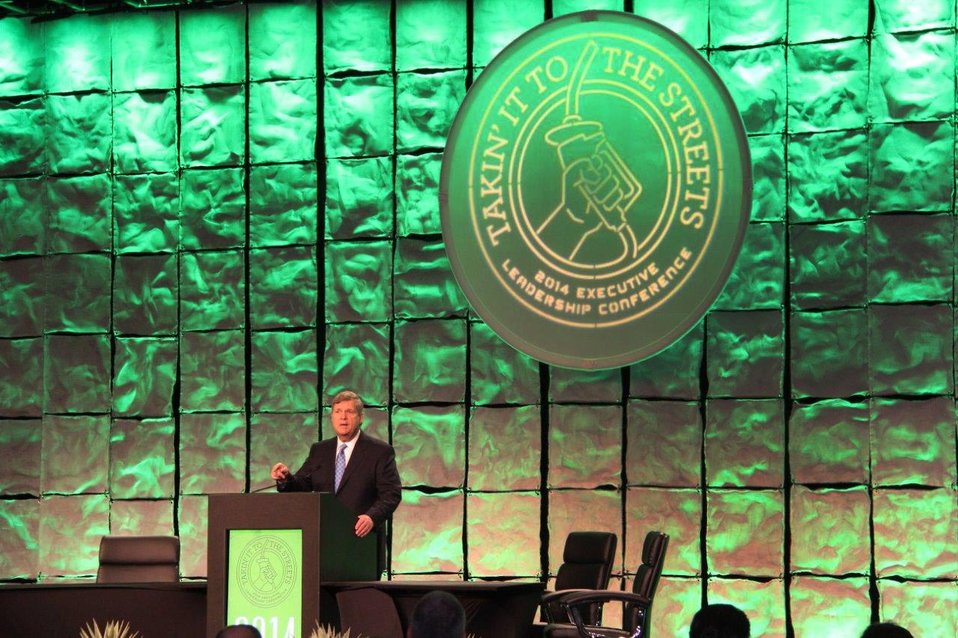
Agriculture Secretary Tom Vilsack speaks at the fifth annual executive leadership conference 'Taking it to the Streets' at the JW Marriott Desert Ridge Hotel in Phoenix, AZ on Feb. 27, 2014.